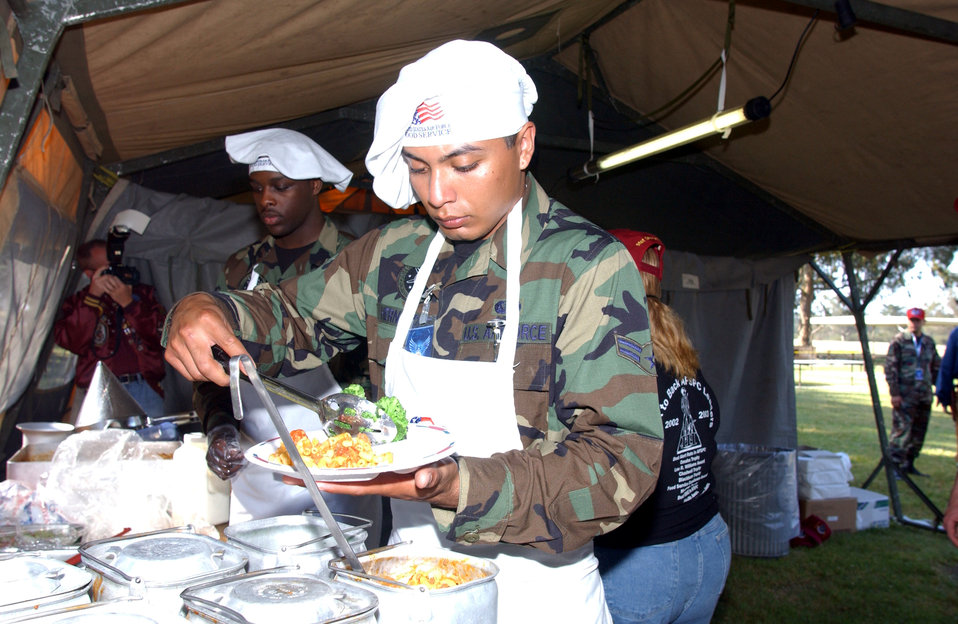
Food fit for a king

VANDENBERG AIR FORCE BASE, Calif. -- Airmen 1st Class David Hernandez (foreground) and Marcus Walker proudly serve the final product of their labor at the cooking competition for Guardian Challenge here May 4. Guardian Challenge, the world's premier space and missile competition, is a four-day event held annually. It tests the wartime readiness of Air Force Space Command's Airmen in spacelift, ICBM operations, communications, maintenance, helicopter operations, security forces and chef food preparation. Airmen Hernandez and Walker are chefs assigned to the 91st Space Wing, aka